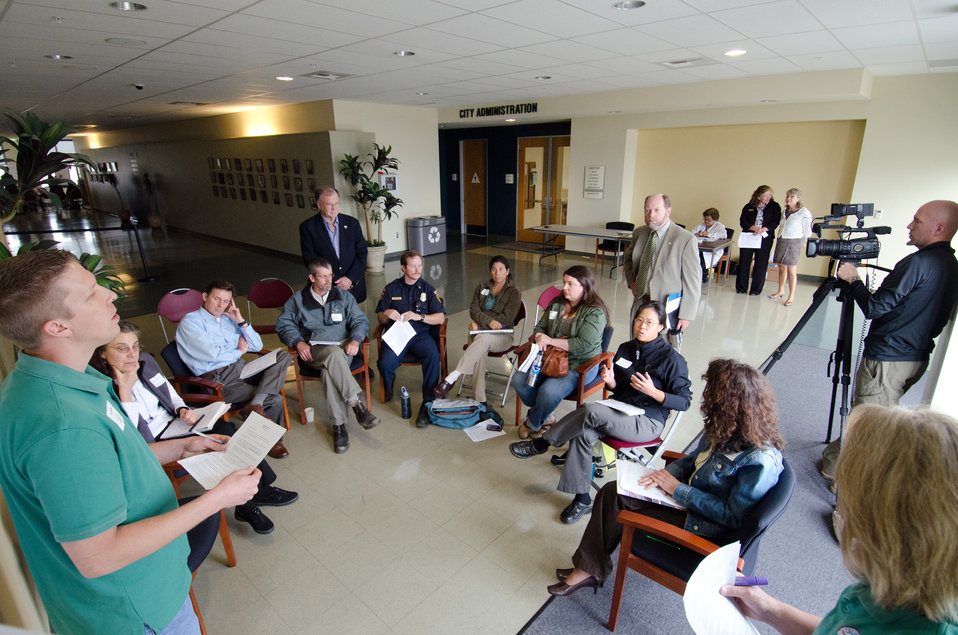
Congressman Sam Farr (standing dark suit) and U.S. Department of Agriculture Deputy Regional (Region 5) Forester Ron Ketter (standing tan suit) are recorded on video by USDA Videographer David Kosling (right) as they listened to a federal representative provides input to Bureau of Land Management's Sky Murphy (left) during the America’s Great Outdoors Initiative (AGO) Monterey Bay Pilot Area Focus Session in the City of Watsonville’s Civic Plaza in California, on Friday, June 17, 2011. Congressman Sam Farr, U.S. Department of Agriculture (USDA) Deputy Undersecretary for Natural Resources and Environment Ann Mills, USDA Natural Resources Conservation Service State Conservationist Ed Burton, USDA Region 5 Deputy Regional Forester Ron Ketter, National Oceanic and Atmospheric Administration Monterey Bay National Marine Sanctuary Superintendent and representatives of other Federal resource management agencies came together to identify partnership opportunities and determine actions for natural resource protection and enhancement that achieve water quality protection and publicize voluntary stewardship in the watersheds that drain into the Monterey Bay National Marine Sanctuary. This area includes the counties of San Mateo, Santa Cruz, Santa Clara, San Benito, Monterey, and San Luis Obispo. Key questions identified existing multi-county or multi land use partnerships; what is not being done; possible partnerships - collective resources to maximize the benefits to natural resources and communities; and additional resources that organizations can bring to maximize AGO. President Barack Obama signed the initiative on April 16, 2010 to develop a 21st Century conservation and recreation agenda.